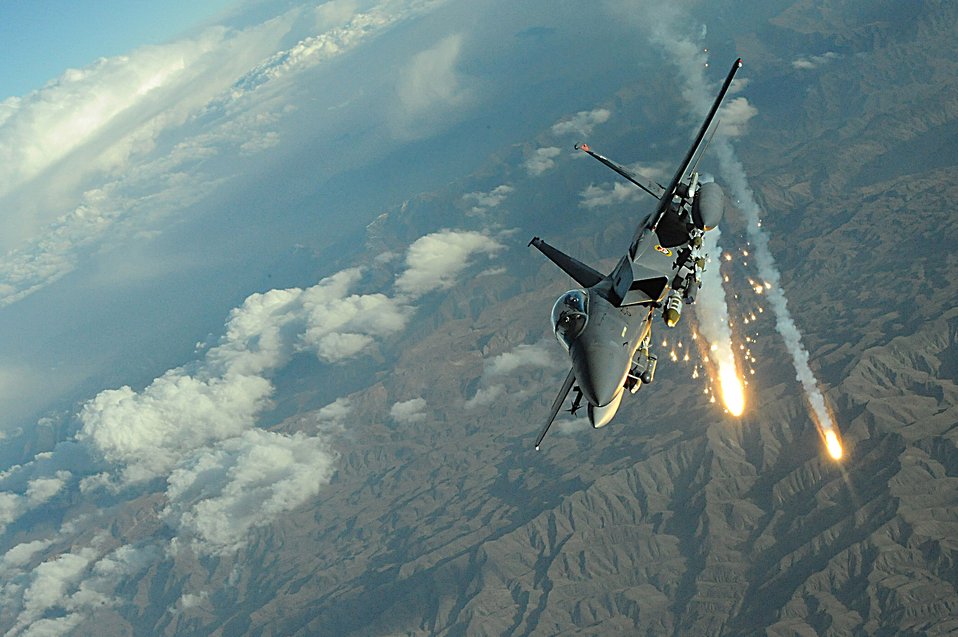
April 17 airpower summary: F-15Es show force

An F-15E Strike Eagle deploys flares during a mission over Afghanistan. The F-15E provides close-air support and armed overwatch in support of Operation Enduring Freedom.